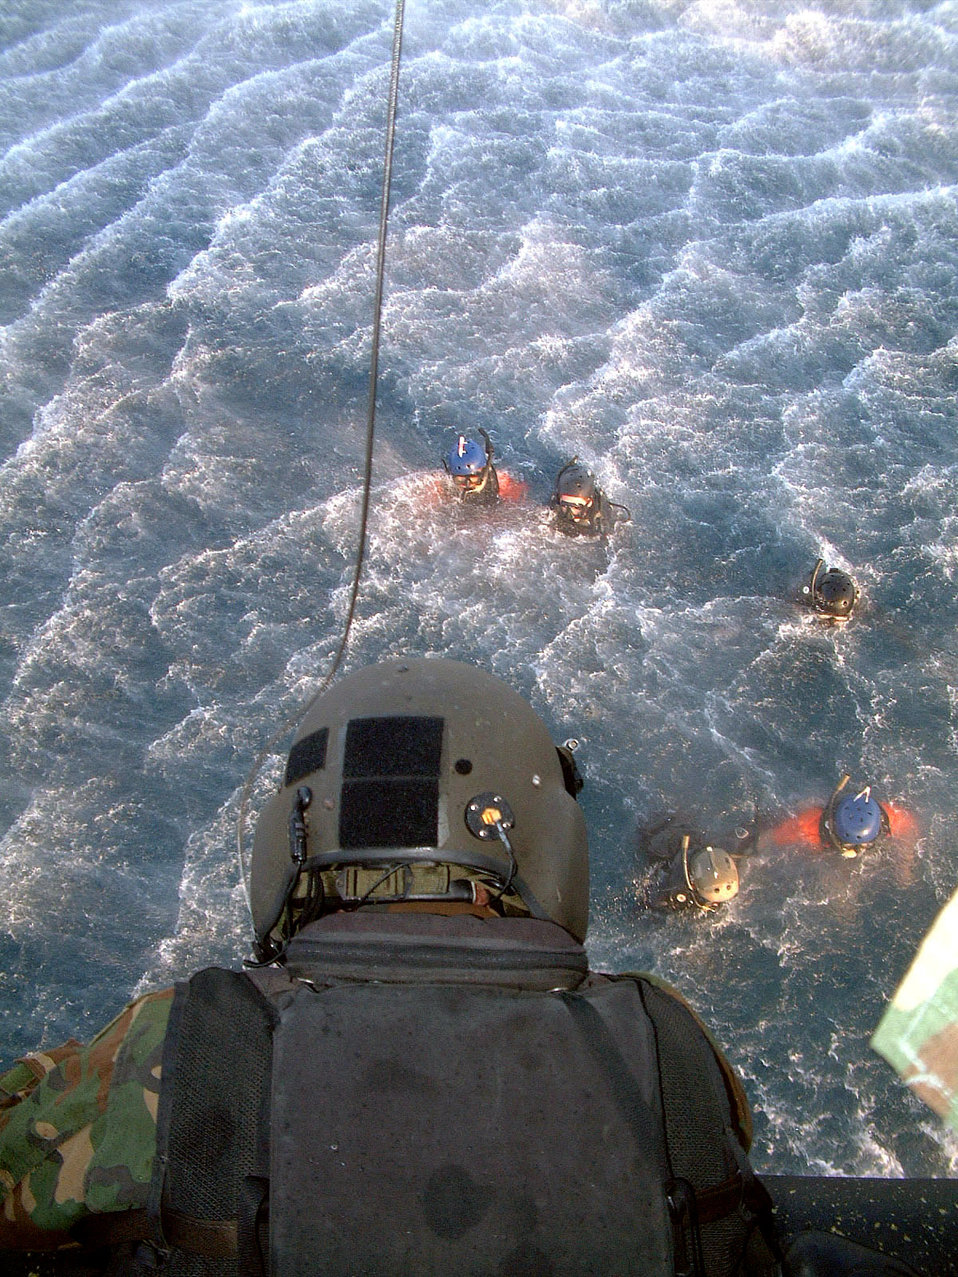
Splish splash

CLARK AIR BASE, Philippines (AFPN) -- Airmen from the 320th Special Tactics Squadron at Kadena Air Base, Japan, (in black) practice rescue training in Subic Bay with Filipino forces (in orange) recently during Exercise Balance Piston 03-5. The training event was aimed at increasing the interoperability of the two nations' armed forces. The pararescuemen jumped from an MH-47 Chinook helicopter flown by the U.S. Army's 160th Special Operations Aviation Regiment.